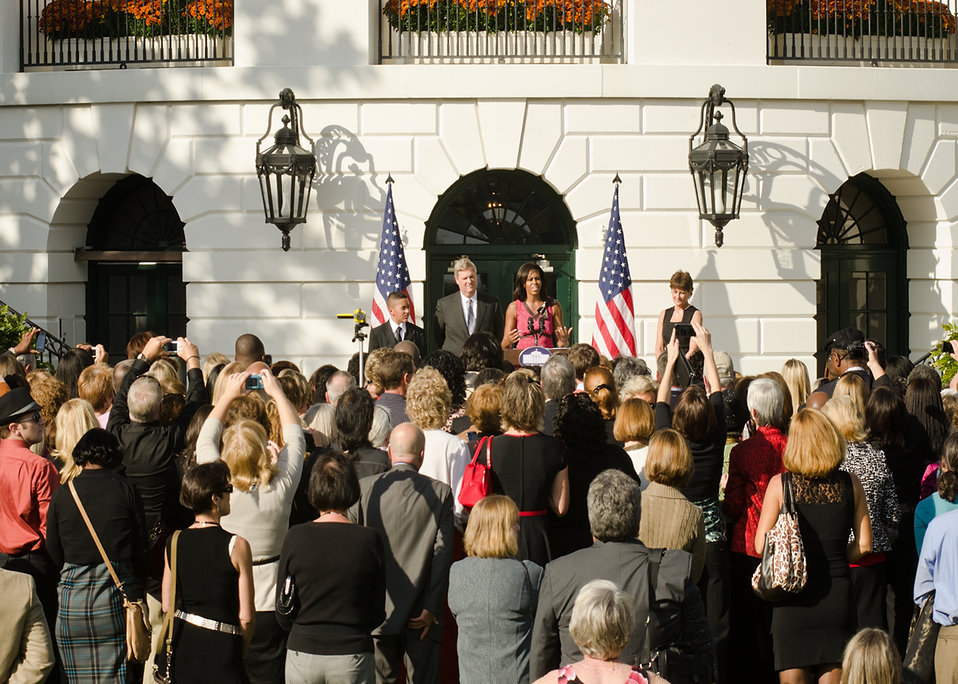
From left: Alex Roman, Walsh Elementary School, Chicago, Illinois, Agriculture Secretary Tom Vilsack, First Lady Michelle Obama and Becky Bounds, Lamar County Schools, Mississippi. Agriculture Secretary Tom Vilsack and First Lady Michelle Obama hosted a reception on the South Lawn of the White House in Washington, DC, Monday, October 17, 2011 to honor the over 1200 winners in the HealthierUS Schools Challenge that met the First Lady’s goal to double the number of participants in the HealthierUS School Challenge in a year. In February 2010, First Lady Michelle Obama introduced “Let’s Move” incorporating the HealthierUS School Challenge into her campaign to promote a healthier generation of children. The HealthierUS School Challenge recognizes elementary, middle and high schools nationwide that create healthier school environments by providing exceptional nutrition education, nutritious food and beverage choices, physical education and opportunities for physical activity. Since the beginning of the HealthierUS School Challenge in 2004, awards have been given to schools in 44 states. As of September 28, 2011, there are 1631 schools certified. A tool kit on how to become a Healthier U.S. School can be found at www.fns.gov.